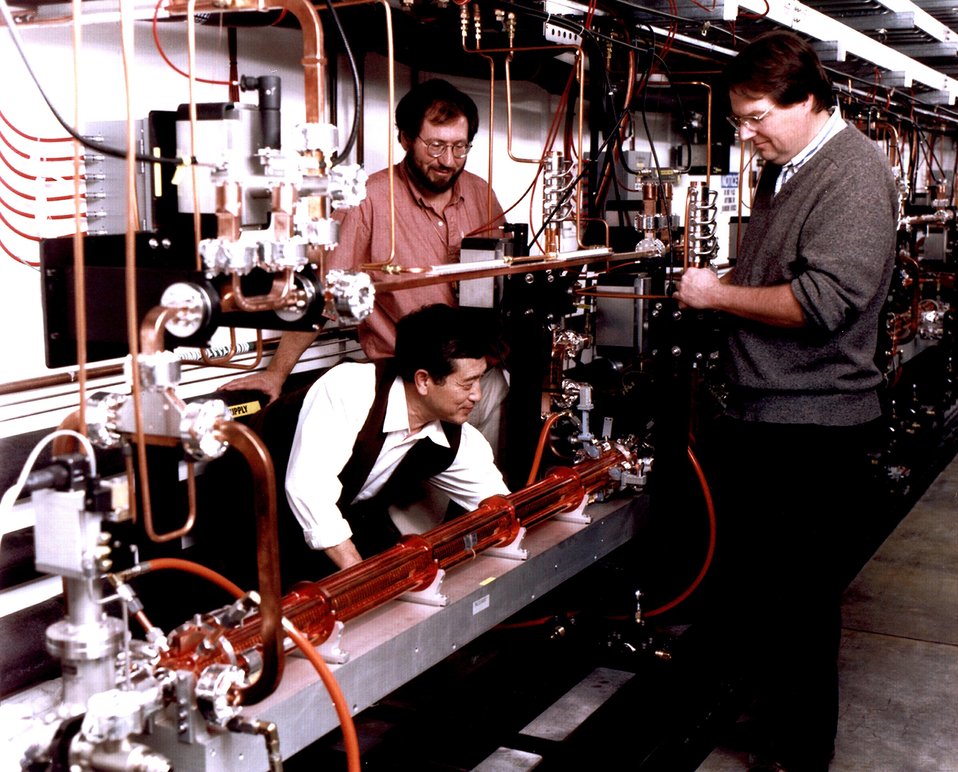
PREPARING A LINEAR COLLIDER TEST AT THE STANFORD LINEAR ACCELERATOR.

DOE'S STANFORD LINEAR ACCELERATOR SCIENTISTS CONDUCT EXPERIMENTAL AND THEORETICAL RESEARCH IN HIGH ENERGY PHYSICS AND DEVELOPMENTAL STUDIES IN NEW TECHNIQUES FOR PARTICLE ACCELERATION. SLAC IS A NATIONAL BASIC RESEARCH LABORATORY, PROBING THE STRUCTURE OF MATTER AT THE ATOMIC SCALE WITH X-RAYS AND AT MUCH SMALLER SCALES WITH ELECTRON AND POSITRON BEAMS.